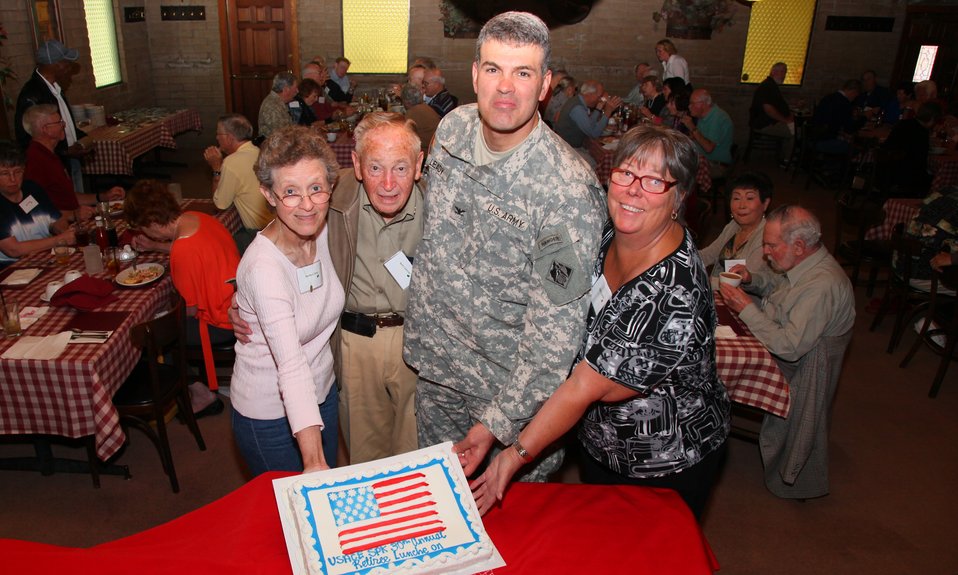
Retirees join COL Leady at the 30th annual celebration

Col. Bill Leady joins Barbara Davy (left), who served the Corps for 42 years, Red Coleman, who retired in 1974, and Kathy Levin, the newest retiree here in 2011, at the 30th annual Sacramento district retiree luncheon at Club Pheasant in West Sacramento on May 26.